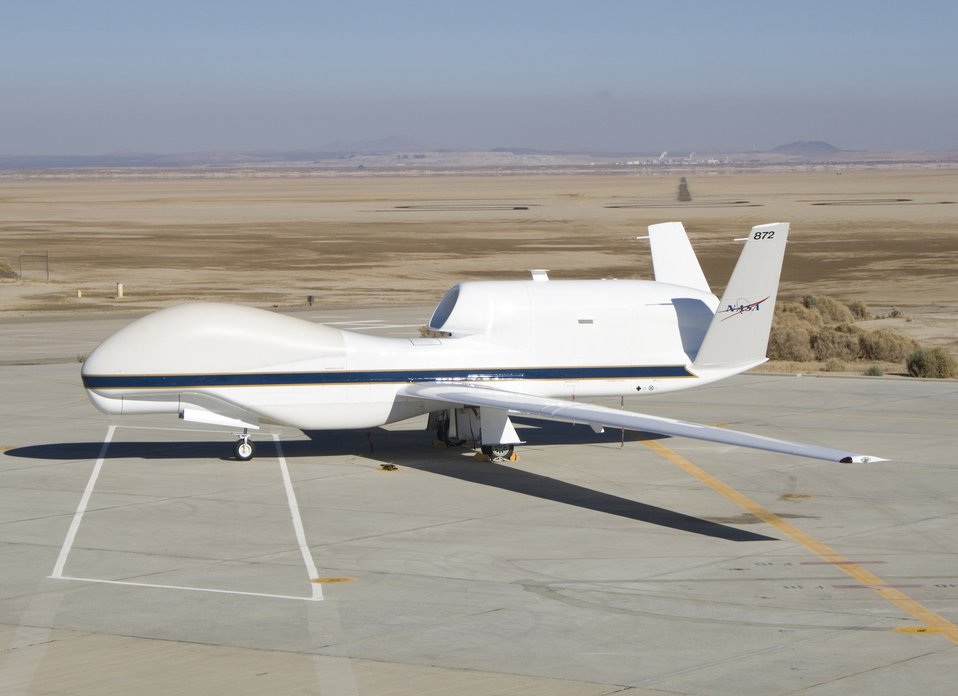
Global Hawk to NASA

Two Global Hawk Advanced Concept Technology Demonstration aircraft were transferred from the U.S. Air Force to NASA's Dryden Flight Research Center at Edwards Air Force Base, Calif. Initial research activities beginning in 2009 will support NASA's Airborne Science Program. The ability of the unmanned Global Hawk aircraft brings a new capability to the science community for measuring, monitoring and observing remote locations of the Earth. The two Global Hawks were the first and sixth aircraft built under the original development program, and were made available to NASA when the Air Force had no further need for them.